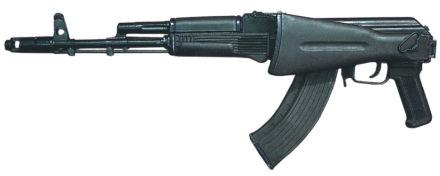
Čeština: AK-103 se sklopenou pažbou. Deutsch: AK-103 mit eingeklappter Schulterstütze. AK-103 with the stock folded. 日本語: 7.62×39mm弾仕様のAK-103 銃床を折りたたんだ状態. 7.62×39mm弾仕様のAK-103 銃床を折りたたんだ状態. Українська: АК-103. Приклад складений. 中文: 摺疊槍托後的AK-103.